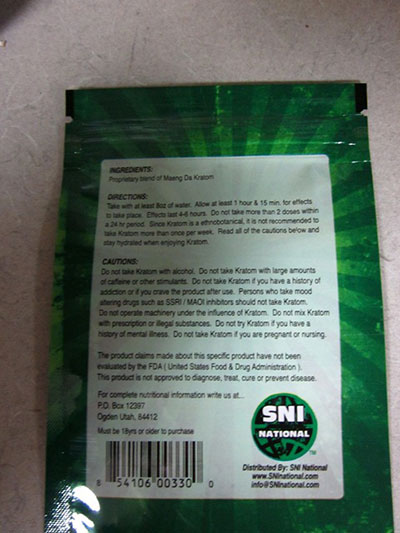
RECALLED – Maeng Da Kratom, Max Kratom, and Bali Kratom

March 14, 2014 – Product Recall – SNI National is Voluntarily recalling Kratom XL 4 Pack, Maeng Da Kratom 10 Pack, Max Kratom 20 Pack, and Bali Kratom 40 pack Due to Undeclared Drug Ingredients.